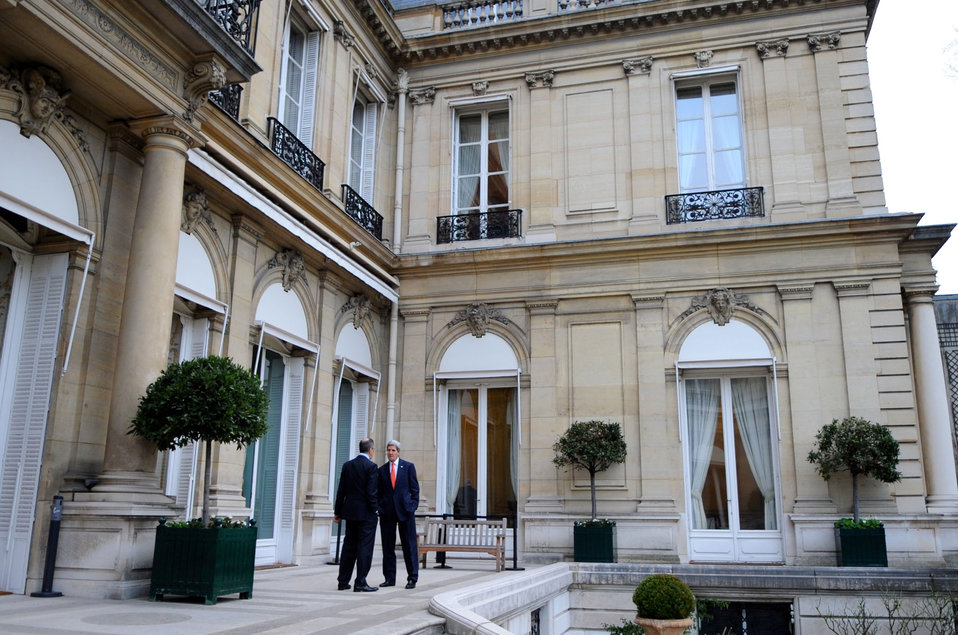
Secretary Kerry Holds a One-on-One Discussion With Russian Foreign Minister Lavrov

U.S. Secretary of State John Kerry and Russian Foreign Minister Sergey Lavrov hold an impromptu one-on-one meeting on the back patio of the U.S. Ambassador's Residence in Paris, France, on January 13, 2013.